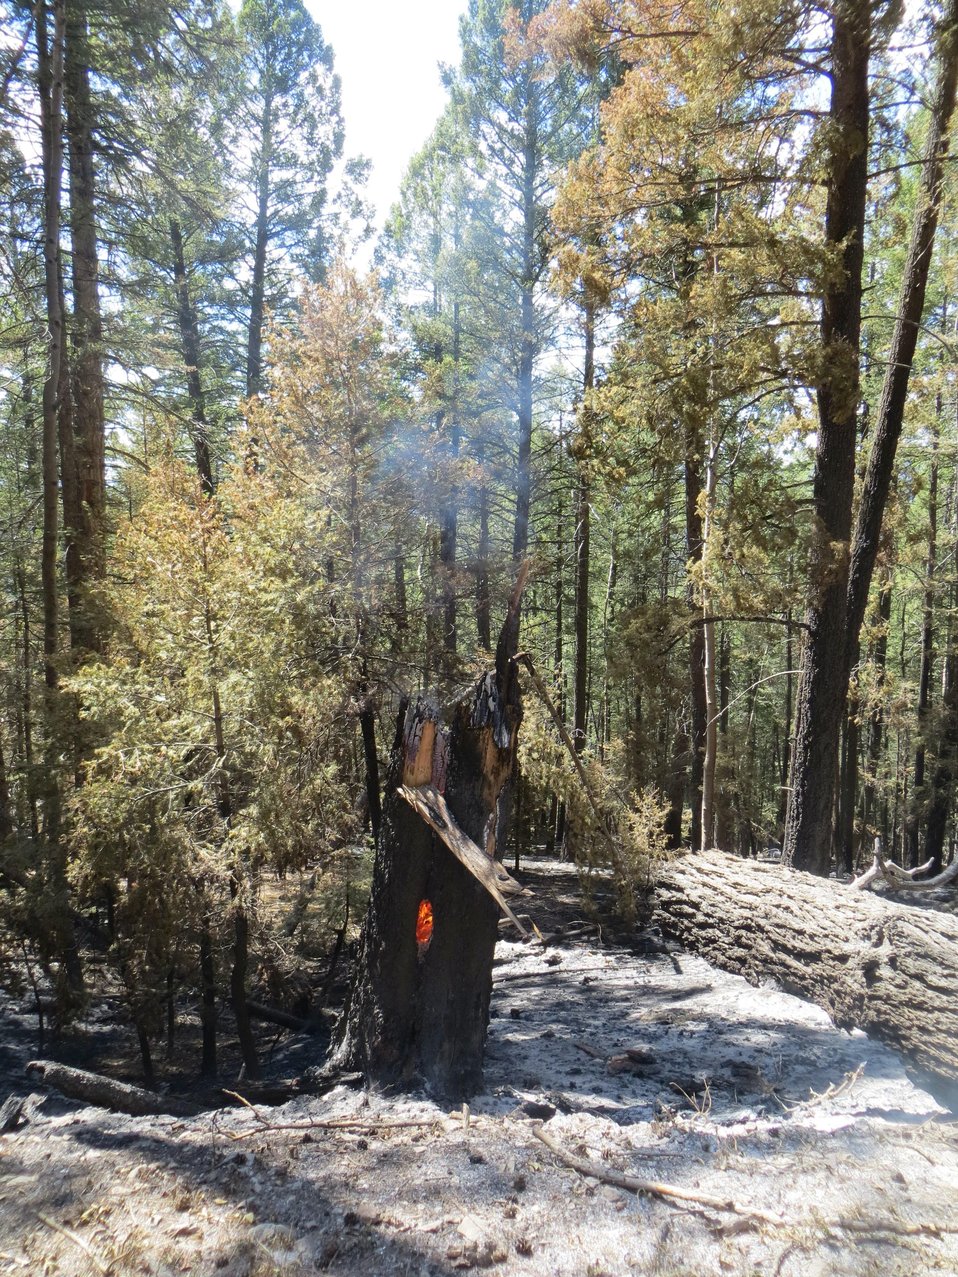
A Burned Area Emergency Response (BAER) team encounters a burning stump while examining a burned area after the Thompson Ridge Fire in the Sante Fe National Forest in New Mexico. The Thompson Ridge Fire in the Sante Fe National Forest approximately 10 miles north of Jemez, NM began on May 31, 2013 by human ignition consumed over 23, 965 acres. BAER is a rapid assessment of burned watersheds by a BAER team to identify imminent post-wildfire threats to human life and safety property and critical natural or cultural resources on National Forest System lands and take immediate actions to implement emergency stabilization measures before the first major storms. Fires result in loss of vegetation exposure of soil to erosion and increased water runoff that may lead to flooding increased sediment debris flows and damage to critical natural and cultural resources. BAER team members implement seeding and mulching installation to prevent erosion, erect temporary water run-off control structures that will protect recovering areas, and installation of warning signs, replace safety related facilities, remove safety hazards, prevent permanent loss of habitat for threatened and endangered species, and prevent the spread of noxious weeds and protect critical cultural resources.